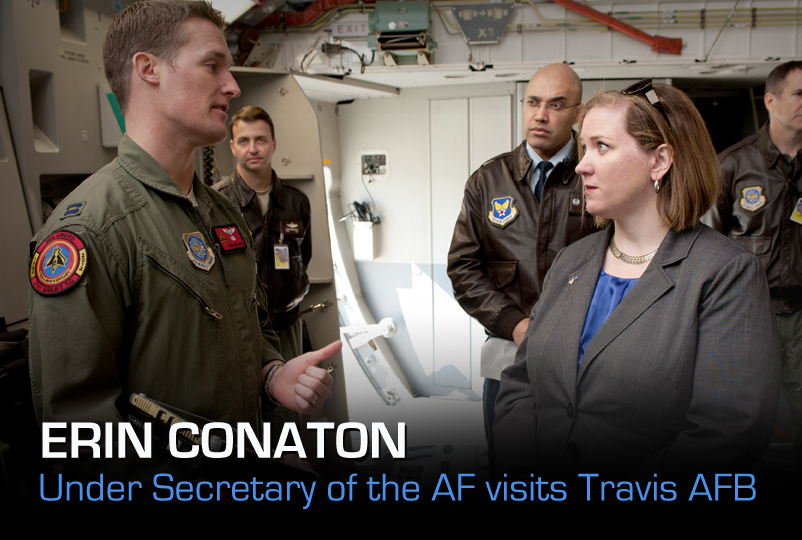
Erin Conaton